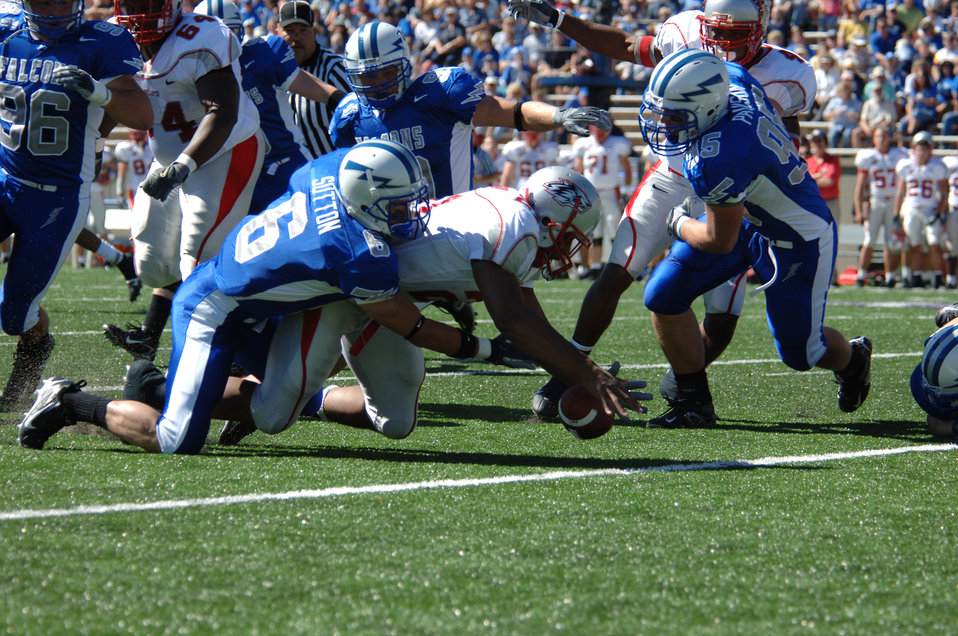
Air Force beats New Mexico 24-7

Falcons cornerback Chris Sutton grabs for a fumble by New Mexico tailback Rodney Ferguson on the second play of their game Sept. 30. Sutton recovered the fumble on the New Mexico 15-yard line. This set up Air Force's first score six plays later. Air Force went on to win 24-7 over New Mexico, improving its record to 2-1.